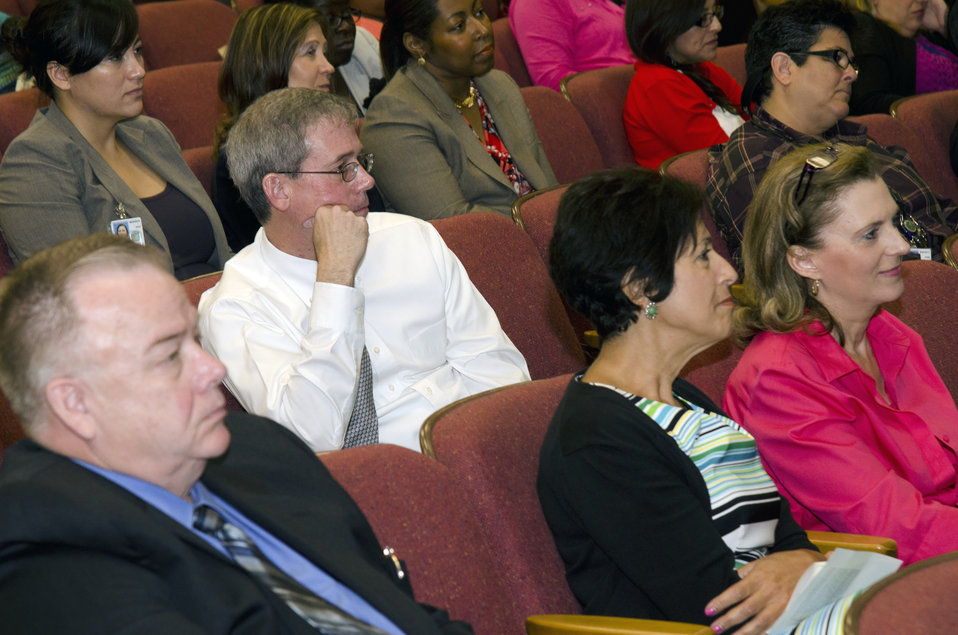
Members od the audience listen to speakers at the Womens Equality Day ceremonies held in the Jefferson Auditorium at the U.S. Department of Agriculture (USDA) in Washington, D.C. on Thursday, Aug. 22, 2013.